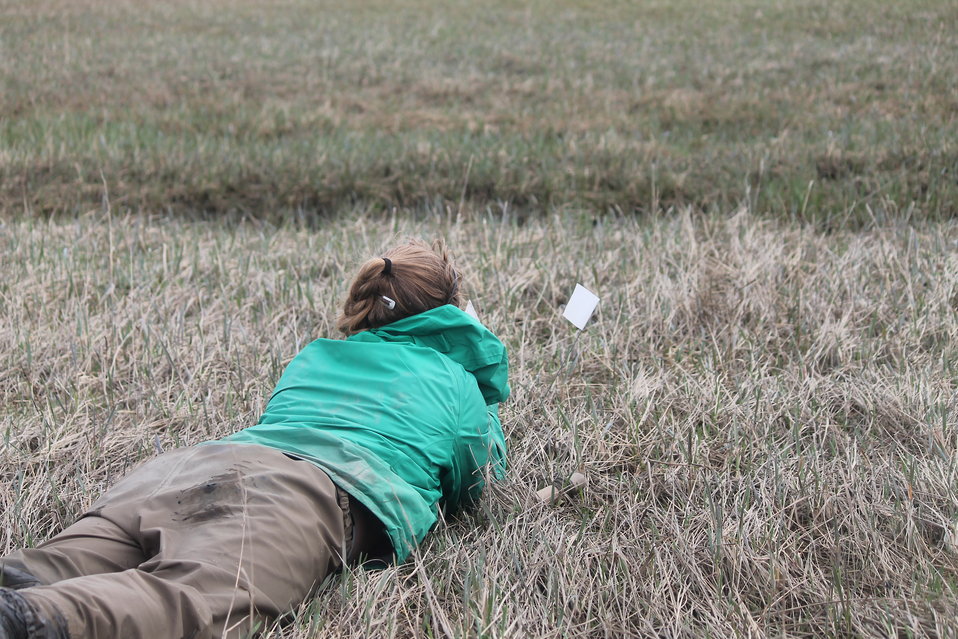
Bow-trapping

The bow-trap is set off by a trigger that is attached to a 100 foot line. Researchers wait at the end of the 100 ft line until the female returns to the nest. Here Casey, a biotech for the spectacled eider project in 2012, is patiently waiting for a female spectacled eider to return to her nest.

USFWS Yukon Delta NWR